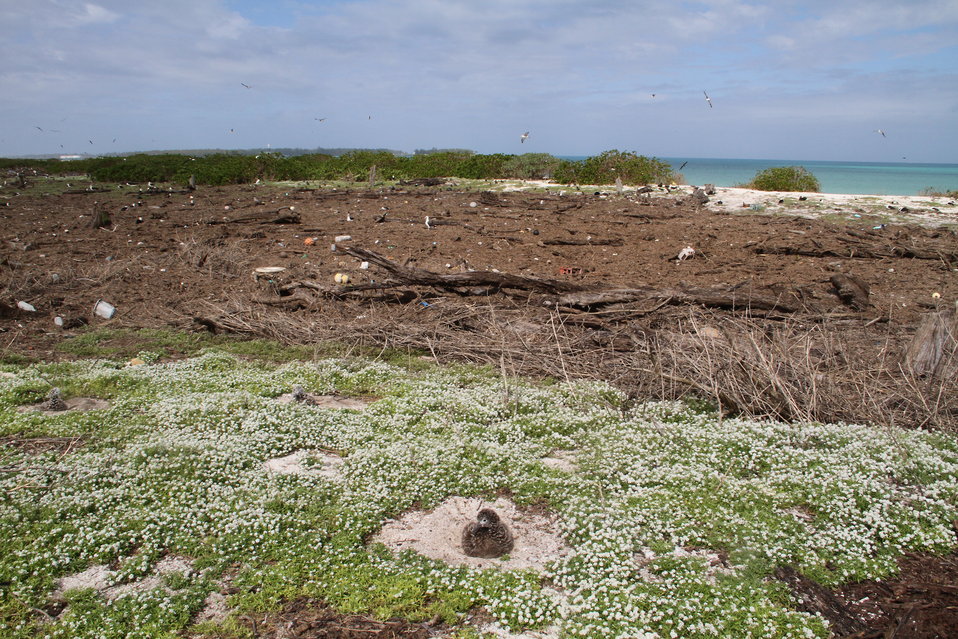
3.13.11.Eastern Island on Midway Atoll depicts

A heavy wrack line, resulting from a five-foot rise in ocean water, separated the lucky albatrooss chicks versus the hundreds that did not survive a Japan earthquake generated tsunami that hit Midway in 2011.